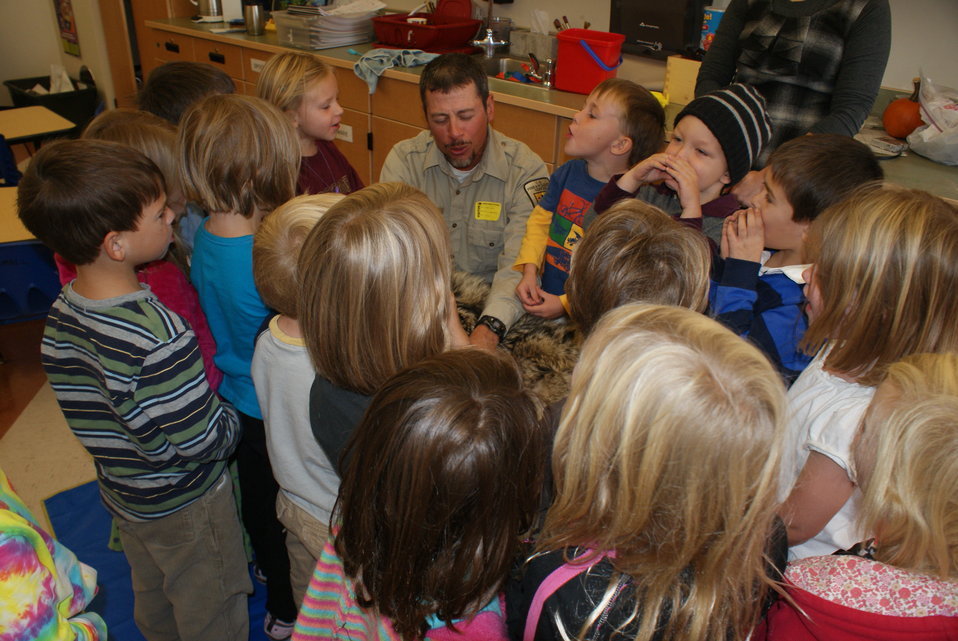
Scientists in the Community Program

U.S. Fish and Wildlife Service Mountain-Prairie Region Deputy ARD for External Affairs, Matt Kales, introduces early childhood education students at William Roberts Elementary School in Denver to some of Colorado's native and historic wildlife species.